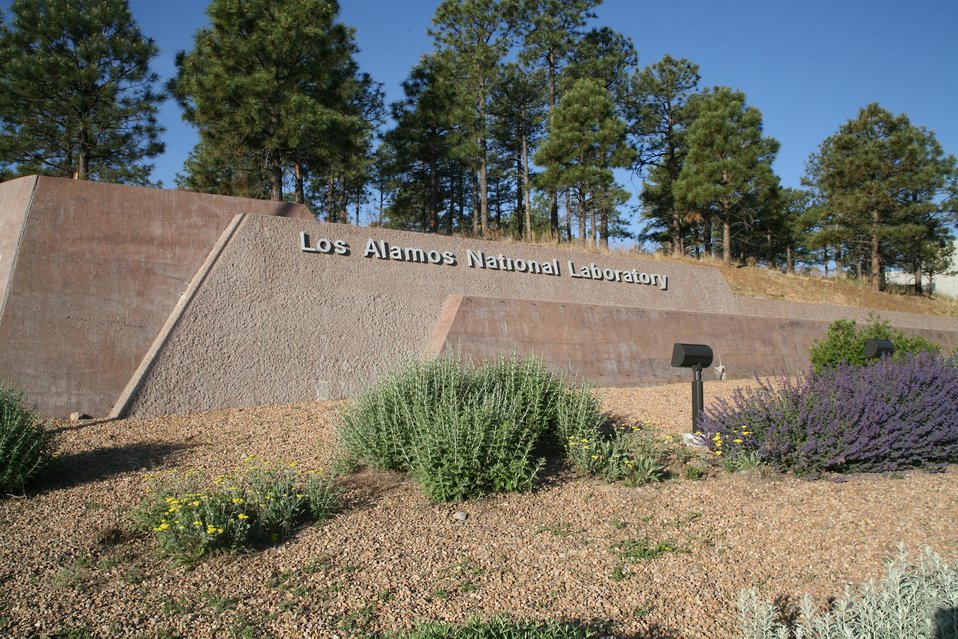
Entrance of Los Alamos National Laboratory, November 2011.